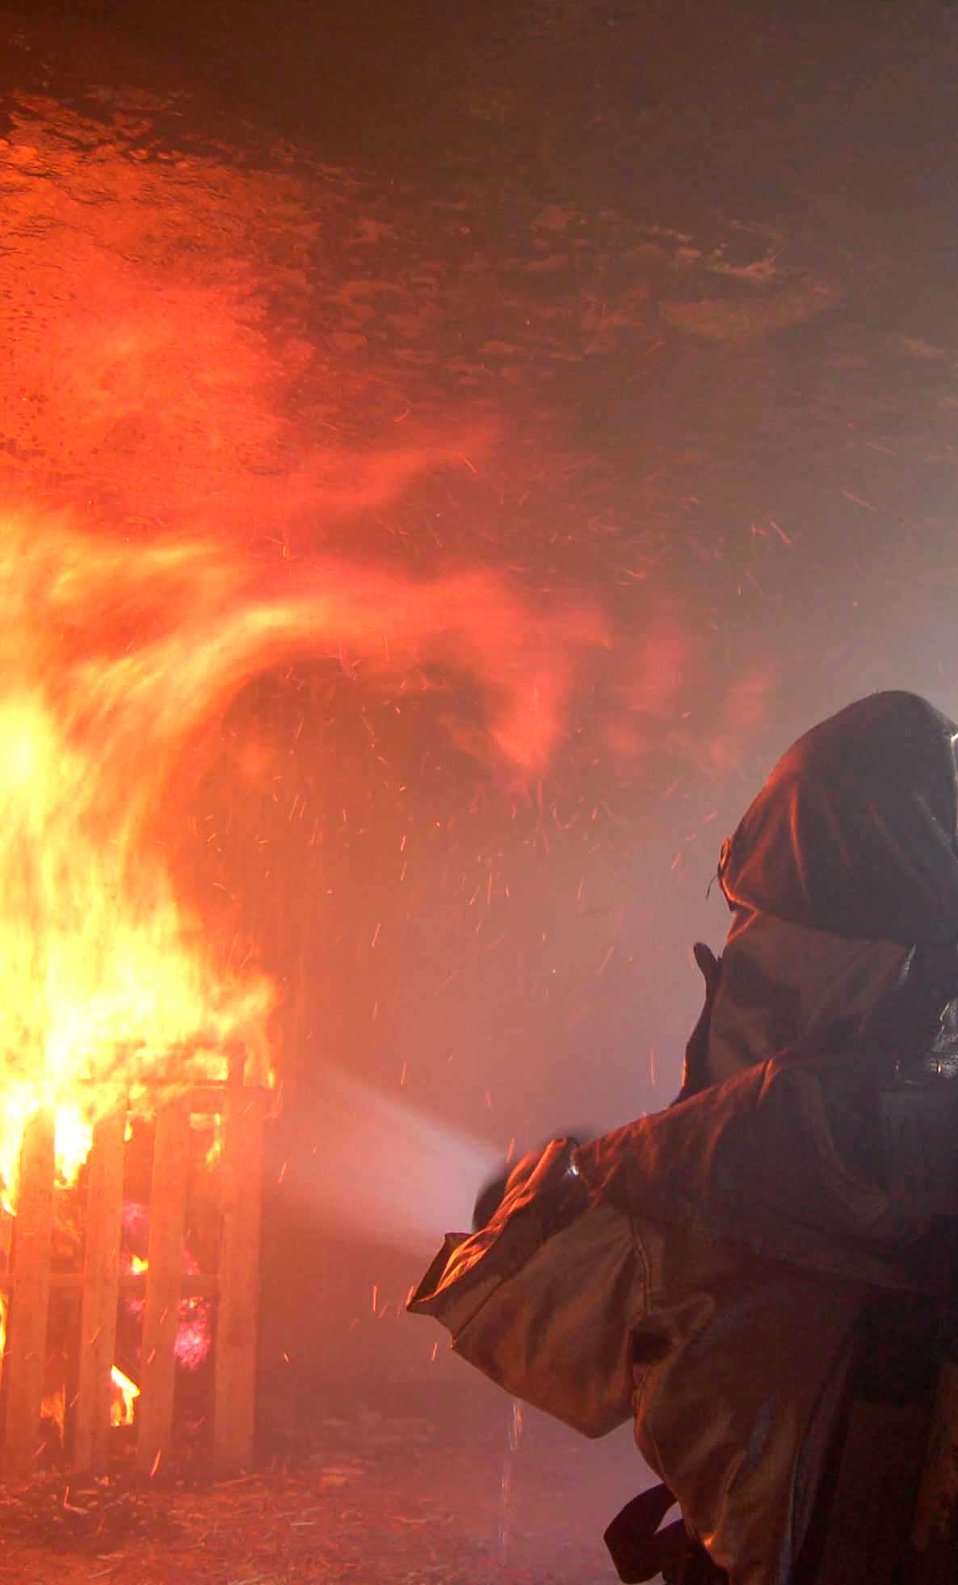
Live-fire training

Senior Airman Zachary Hedquist tries to contain a fire during a live-fire training exercise at Spangdahlem Air Base, Germany, Sept. 10. Airman Hedquist is a firefighter assigned to the 52nd Civil Engineer Squadron.